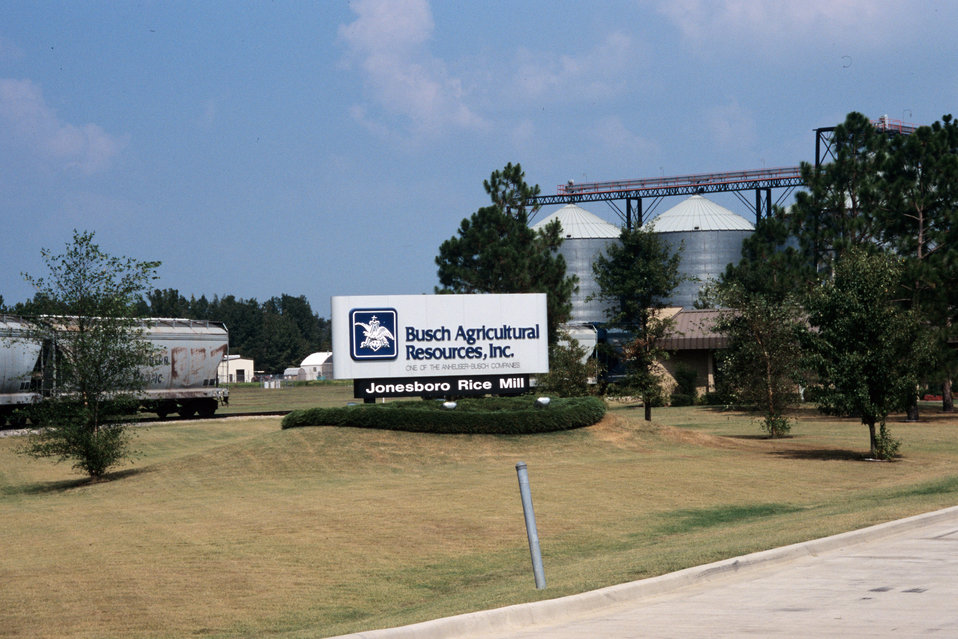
The Busch Agricultural Rice Mill is the U.S. Department of Agriculture’s (USDA) Grain Inspection, Packers and Stockyards Administration (GIPSA) rice inspection laboratory in Jonesboro, AR on Sept. 1, 1996. USDA GIPSA offers inspection services for rice upon request on a fee basis for both domestic and export shipments. Rice inspection services are divided into two basic types: inspection for grade or factor analysis without grade. Inspection for grade involves analyzing the sample according to the quality factors listed in the Official U.S. Standards for Rice and certifying the applicable numeric grade designation, the quality factors responsible for the grade assignment, and any other quality factors the customer requests. Factor analysis involves the analysis of quality factors requested by the applicant for service without the certification of an applicable numeric grade designation. Factors requested by applicants might include free fatty acid, total oil and free fatty acid, stain as a count, broken in brown rice, false smut, and aflatoxin. Official inspections result in the issuance of an official certificate, which reports the grade of the rice. U.S. and international buyers rely on official USDA inspection certificates to provide accurate, official descriptions of the grade, class, and condition of the inspected rice. Official certificates are receivable by all offices and all courts of the United States as prima facie evidence of the truth of the statements stated thereon.